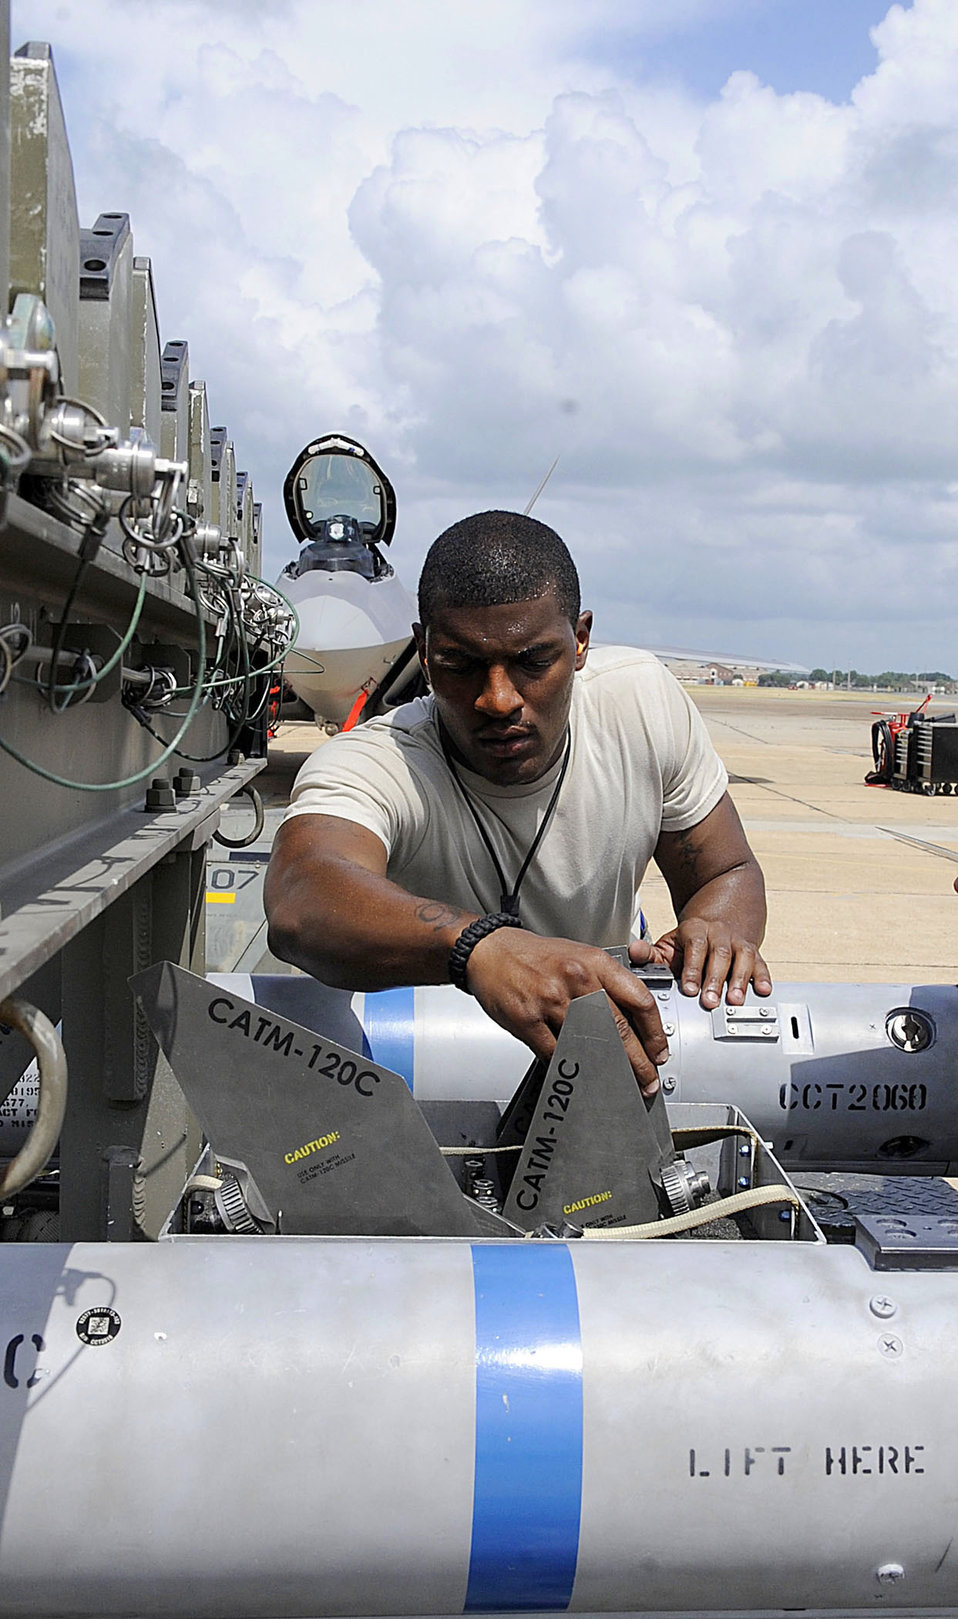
Perfect fit

Staff Sgt. Michael Holloway attaches fins onto an AIM-120 missile during the weapons load-crew-of-the-quarter competition July 9, 2010, at Langley Air Force Base, Va. Sergeant Holloway is a weapons load crew member with the 94th Aircraft Maintenance Unit.